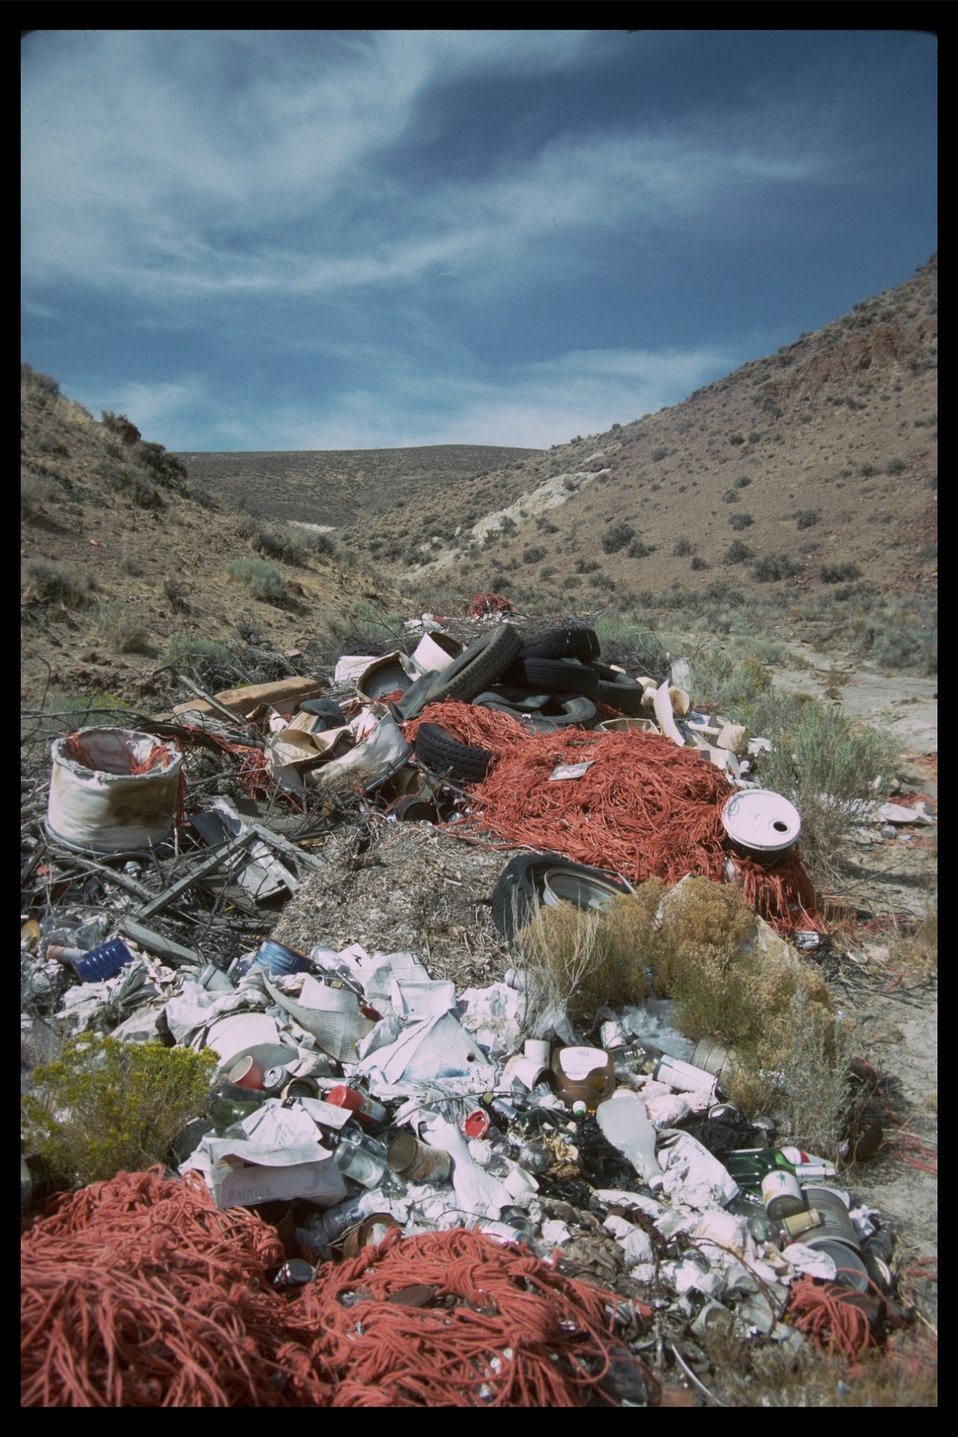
Red Mountain WSA with an illegal dump near Cottonwood Creek. (WSA 2-78)